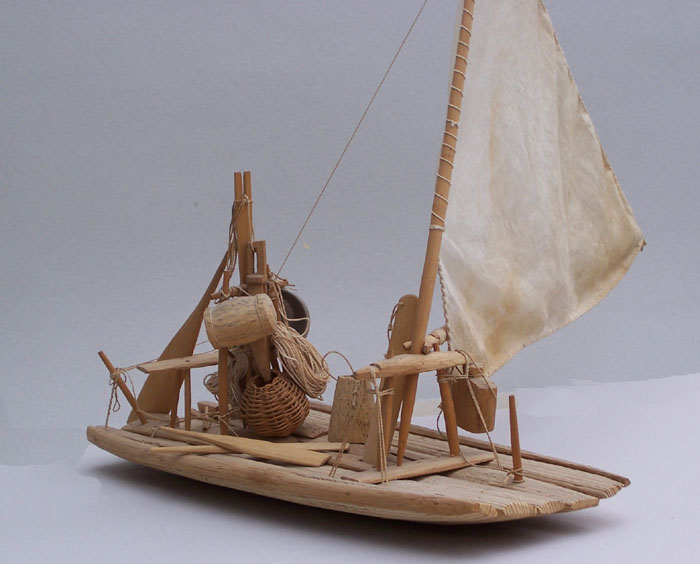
modell of a Jaganda, made by Airton Caetano da Silva, Fortaleza CE, Brasil Jangadas: A Brazilian Fishing Craft